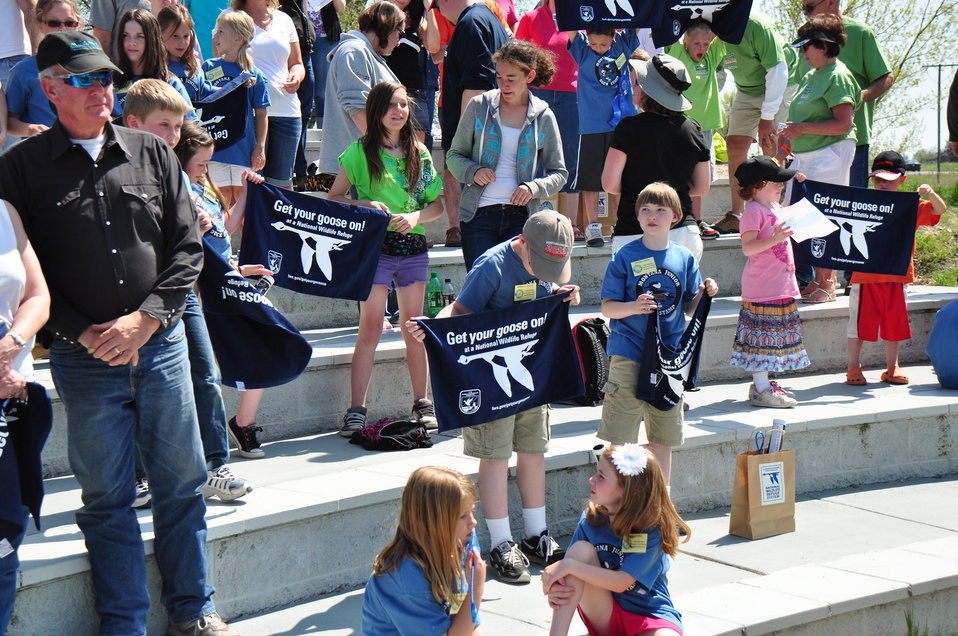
Get Your Goose On!!!

More than 100 people attended the 2012 Montana Junior Duck Stamps award ceremony. The folks pictured here posed with their towels as a videographer captured footage of them screaming, in unison, 'Get Your Goose On!'